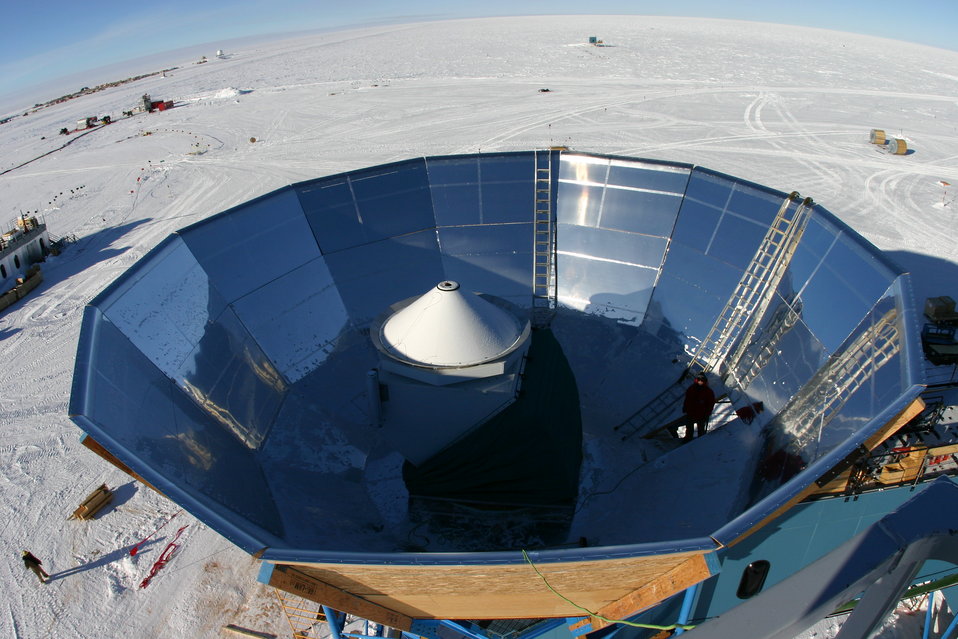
A photograph of the en:QUaD telescope inside its groundshield taken from a crane above the telescope. The telescope structure consists of a en:cassegrain optical system mated to the existing DASI mount surrounded by a reflective groundshield which limits signal contamination by the warm ~200K ground below. The secondary mirror is suspended by a large white foam cone, which is transparent to microwave frequency radiation.